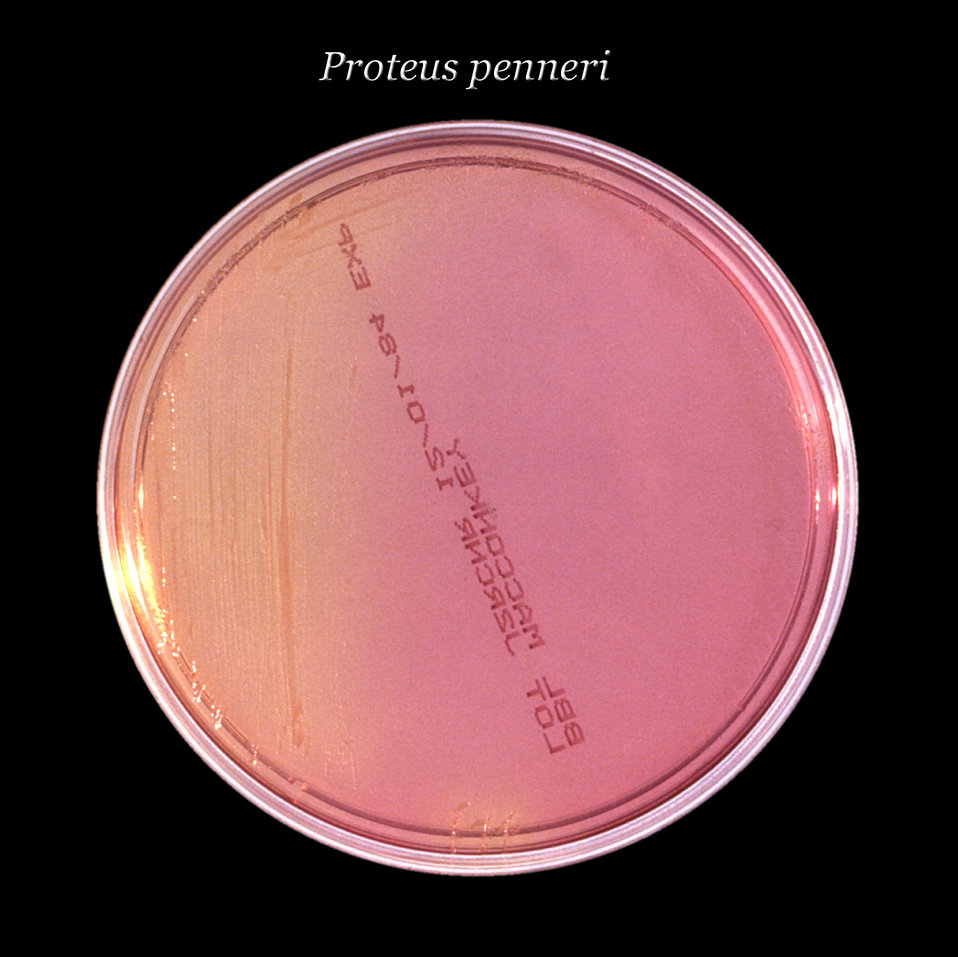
After 24 hours, this inoculated MacConkey agar culture plate cultivated colonial growth of Gram-negative, rod-shaped and facultatively anaerobic Proteus penneri bacteria.